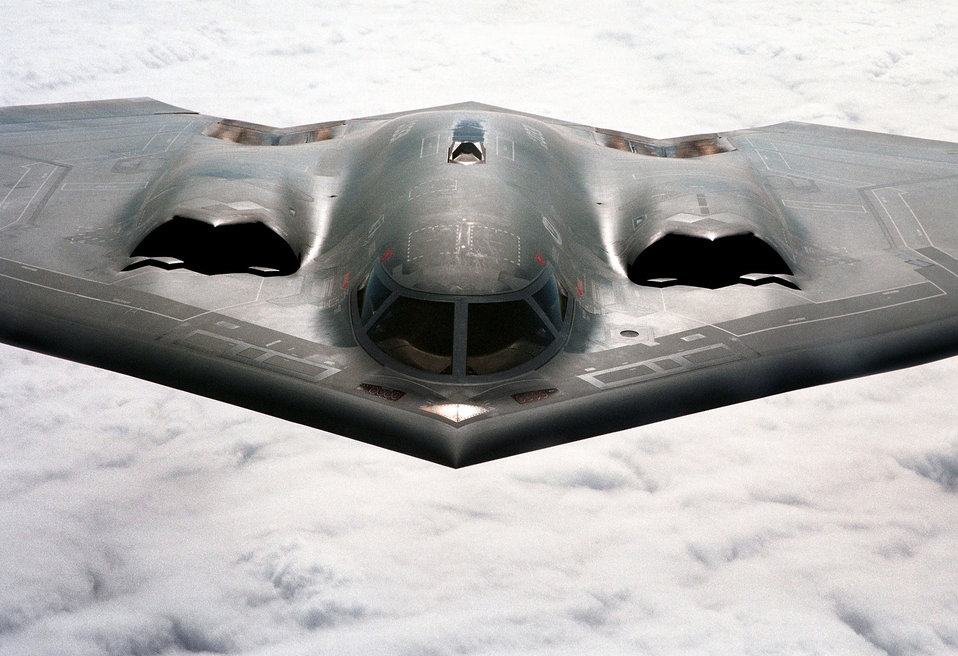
Kansas cruising

OVER KANSAS -- The B-2 Spirit bomber is a revolutionary blending of low-observable technologies with high aerodynamic efficiency and large payload gives the B-2 important advantages over existing bombers. Its unrefueled range is approximately 6,000 nautical miles. Many aspects of the low-observability process remain classified; however, the B-2's composite materials, special coatings and flying-wing design all contribute to its